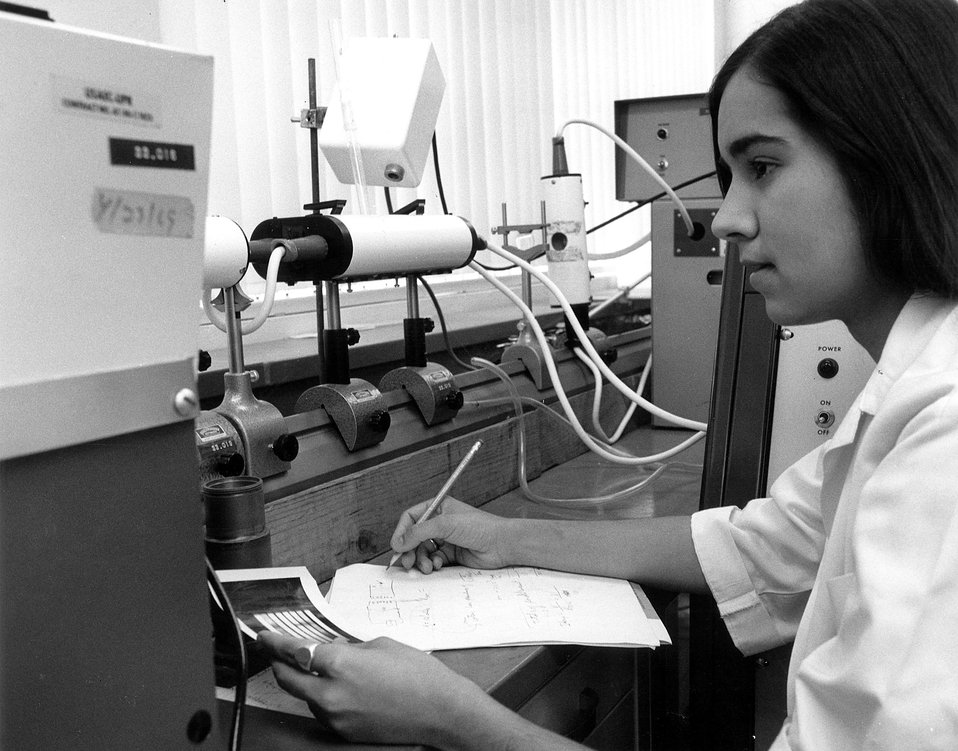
A graduate student at the University of Puerto Rico obtains flash photosynthesis identification of biologically active macromolecules at the AEC's Puerto Rico Nuclear Center, San Juan. Circa 1972.